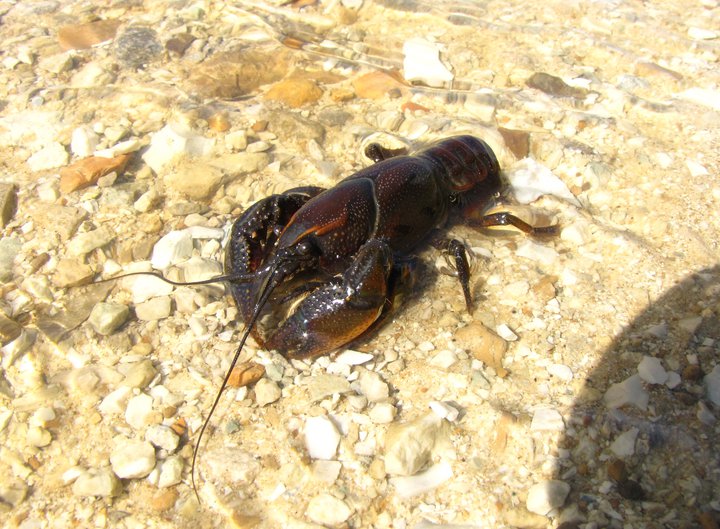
crayfish in stream

Port Louisa National Wildlife Refuge